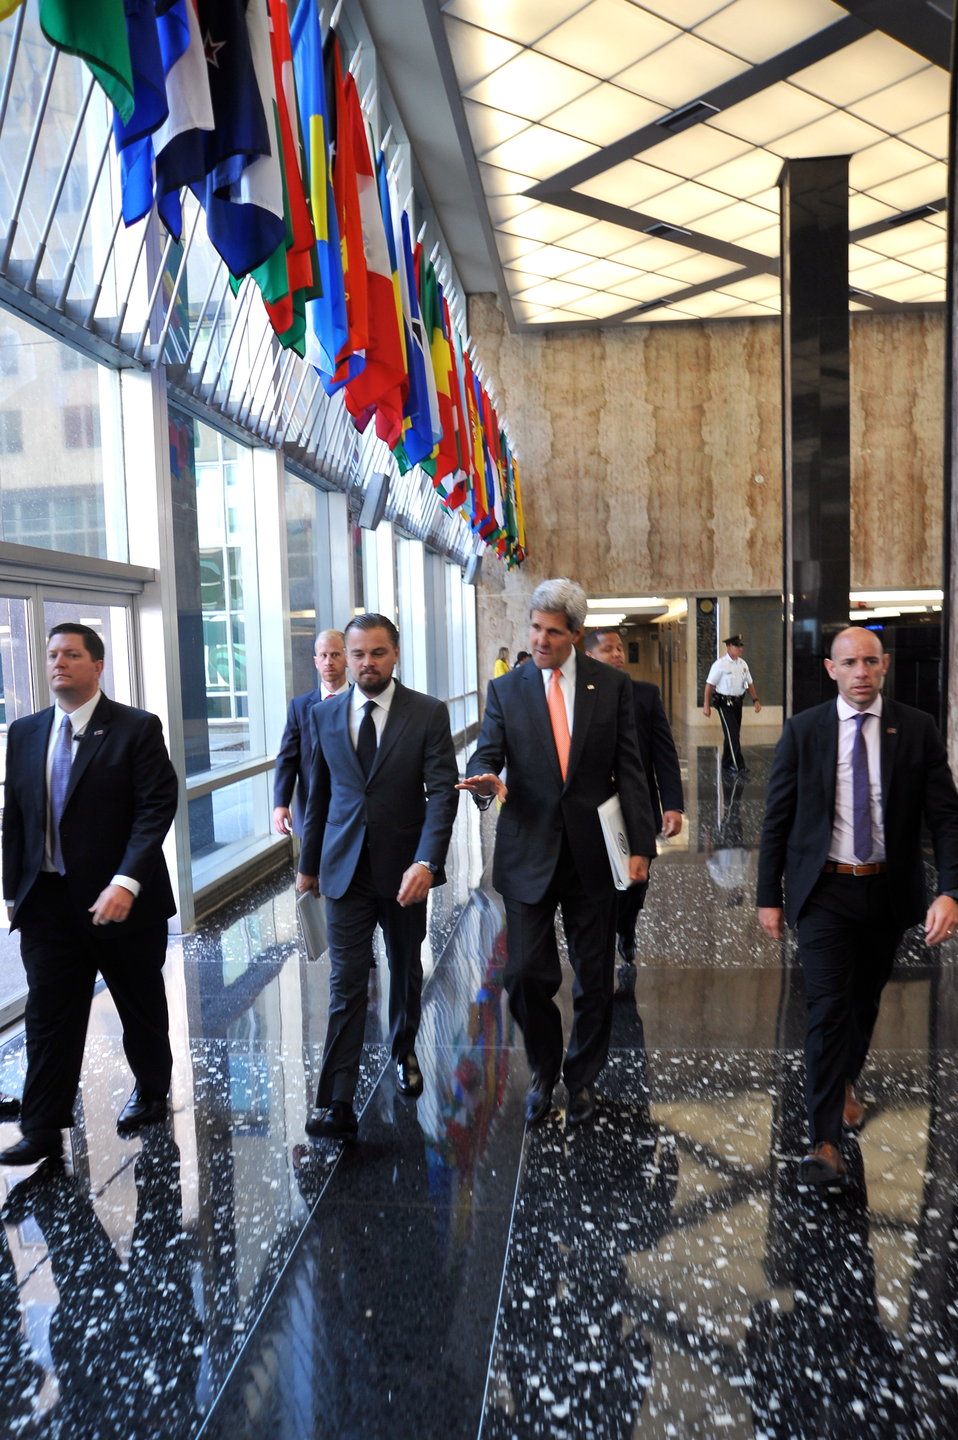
Secretary Kerry Walks With Leonardo DiCaprio in the C Street Lobby of the State Department

U.S. Secretary of State John Kerry walks with Leonardo DiCaprio in the C Street Lobby of the U.S. Department of State in Washington, D.C. on June 17, 2014.